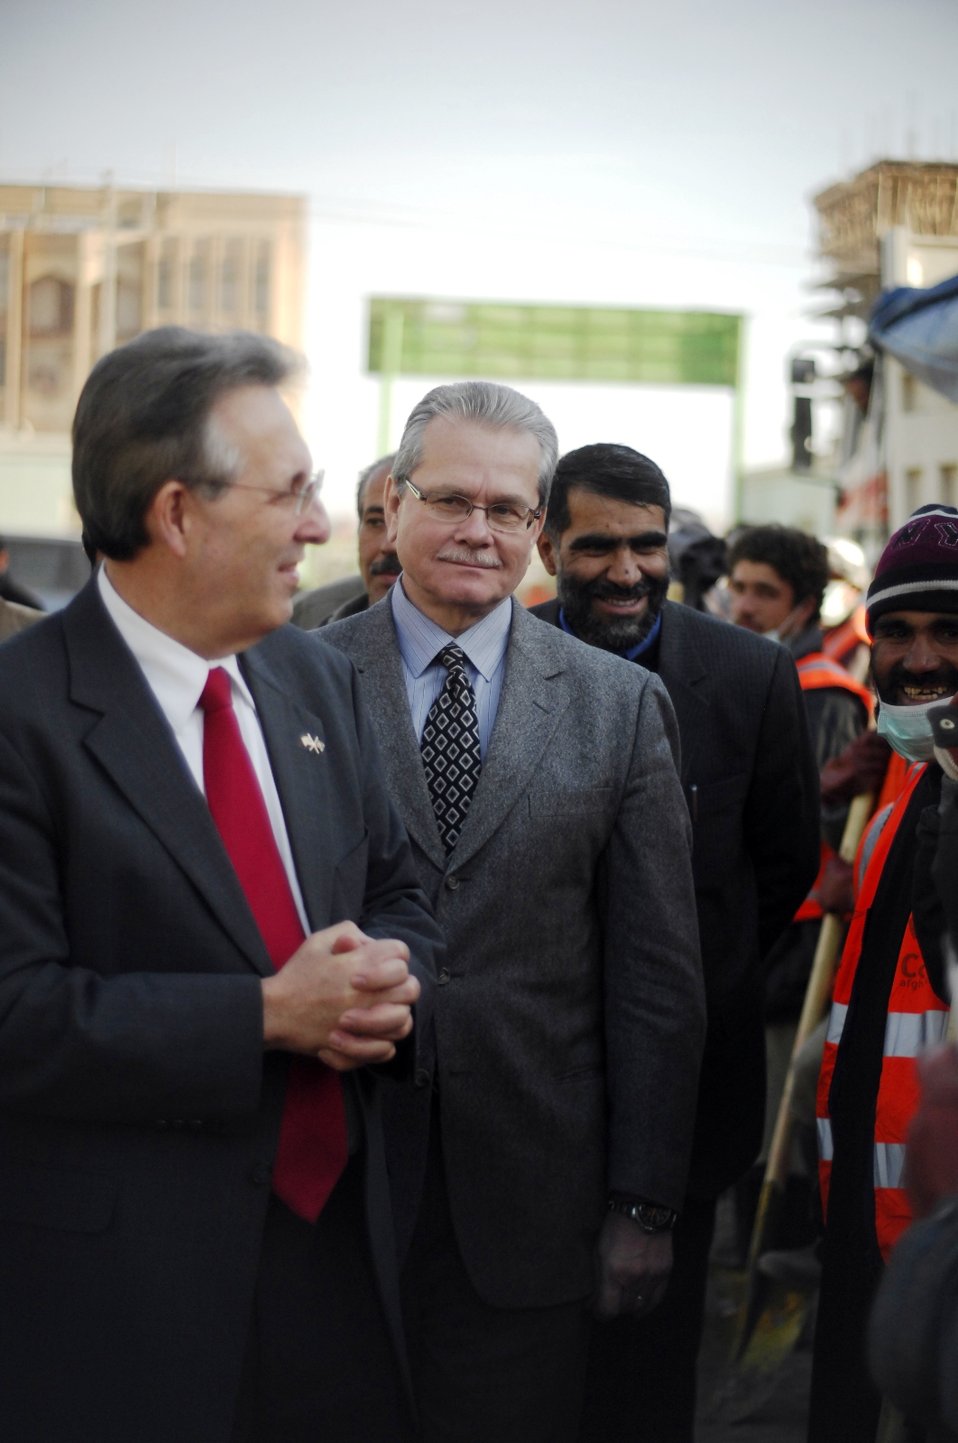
Care19